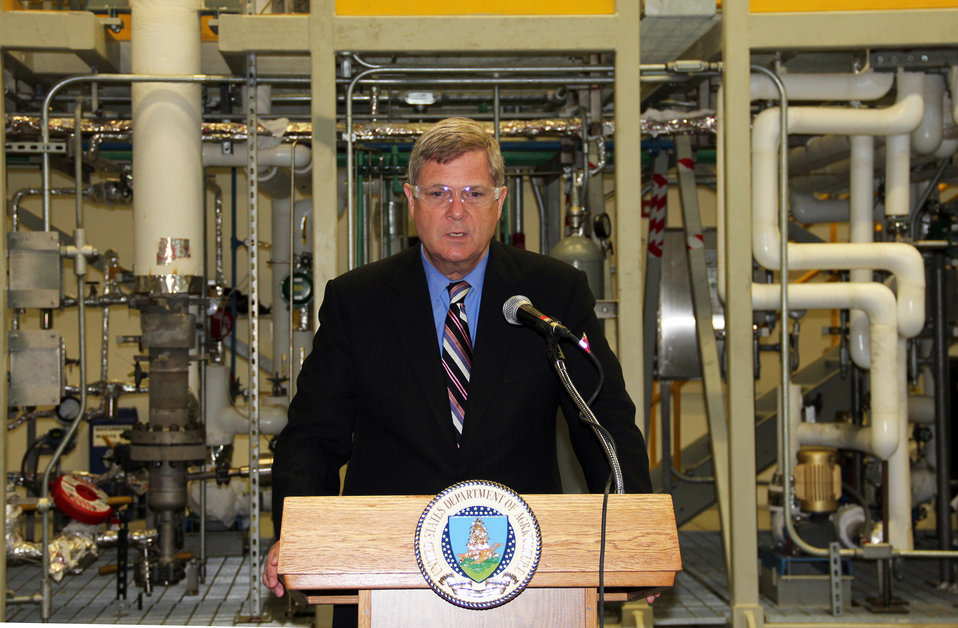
Agriculture Secretary Tom Vilsack speaks to employees at the Virent Energy Systems in Madison, WI on Wednesday, April 18, 2012. This company produces beverage bottles made entirely from plant-based materials. It is an example of how manufacturing products from biobased materials is creating jobs across the country and is reducing America’s reliance on foreign oil.